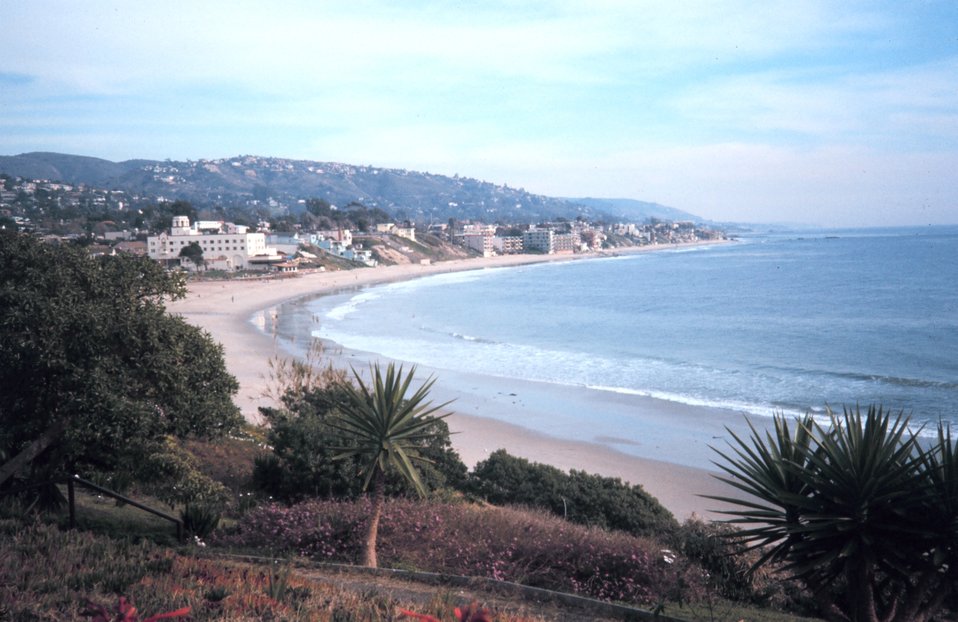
A view of the builtup coastline on a southern California beach